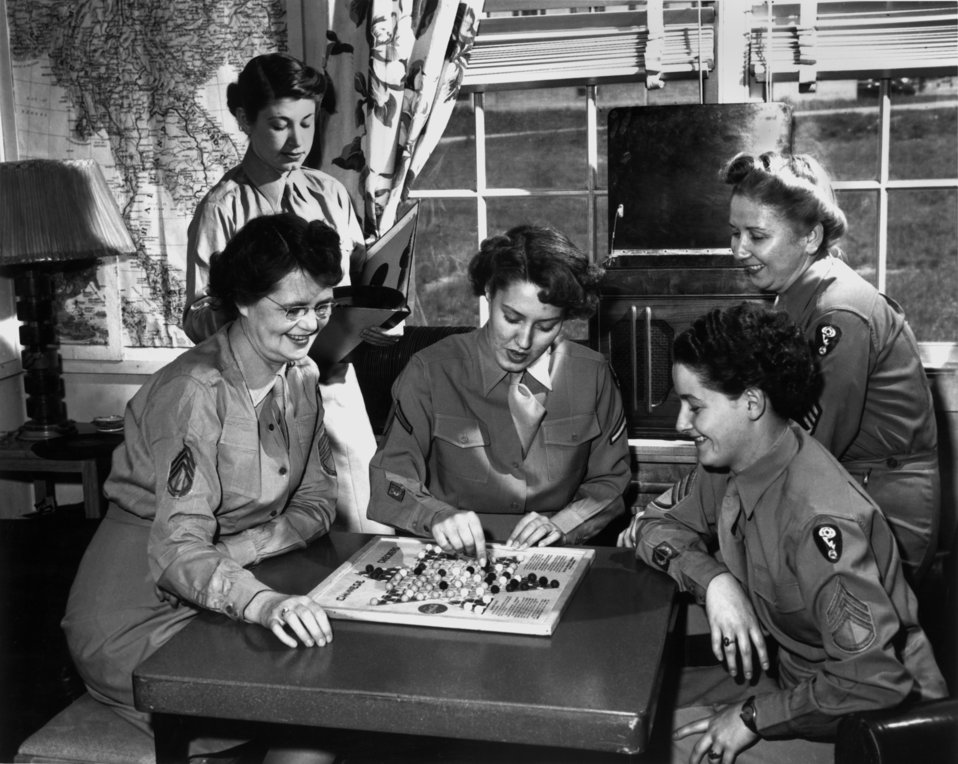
WACs in Day Room at Dorm Oak Ridge

DOE photo Ed Westcott

WACs in Day Room at Dorm Oak Ridge Tennessee (1946)